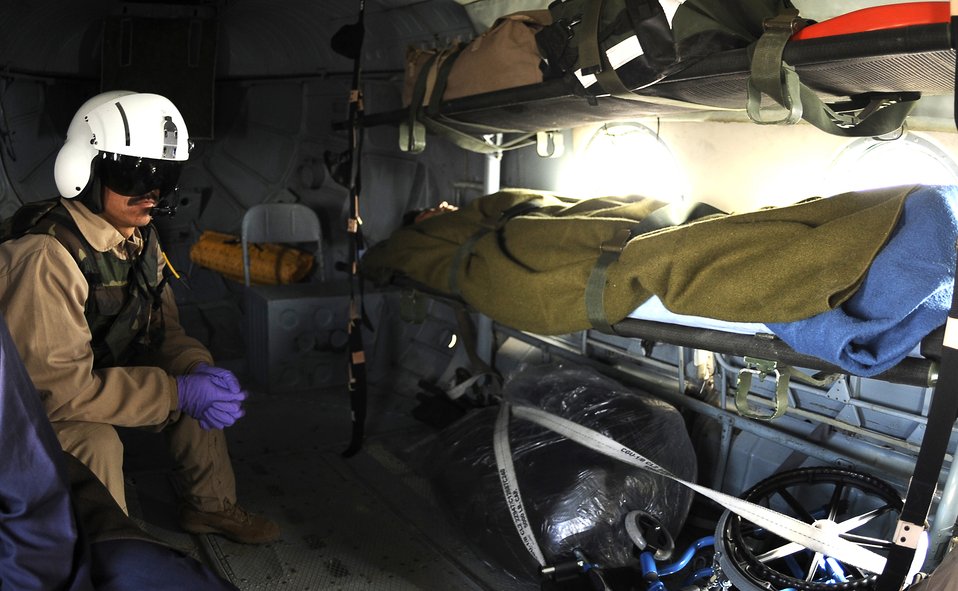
Afghan airman looks after an injured Afghan soldier on a Mi-17 helicopter

Afghanistan National Army Air Corp Sgt. 1st Class Ghulam Sakhi looks after an injured Afghan soldier on a Mi-17 helicopter Feb. 3, 2010, at Bagram Airfield, Afghanistan. Sergeant Sakhi is a flight medic with the 438th Air Expeditionary Advisory Group/Combined Air Power Transition Force.